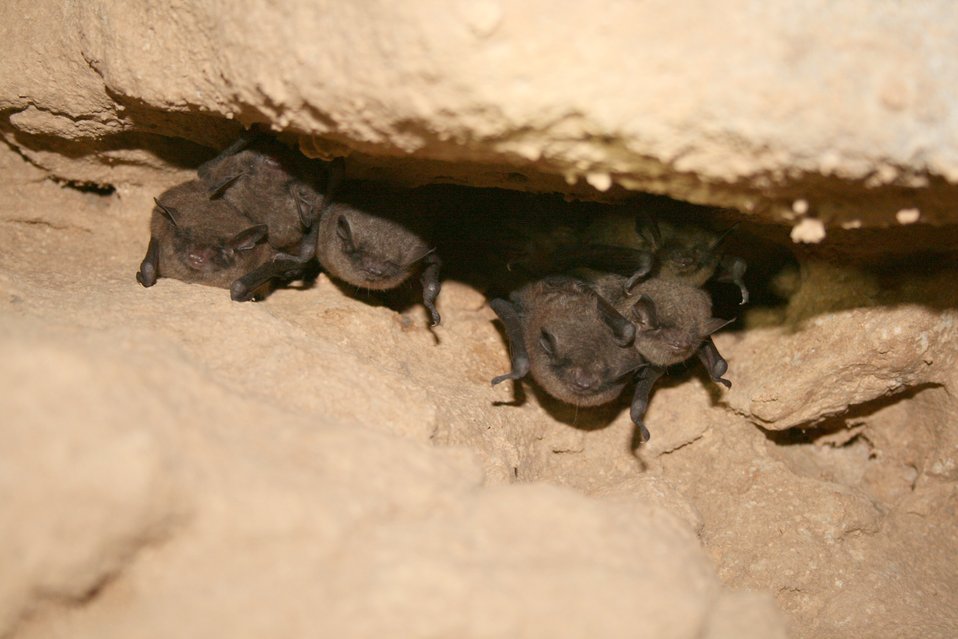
Indiana bats

Hibernating Indiana bats (Myotis sodalis)